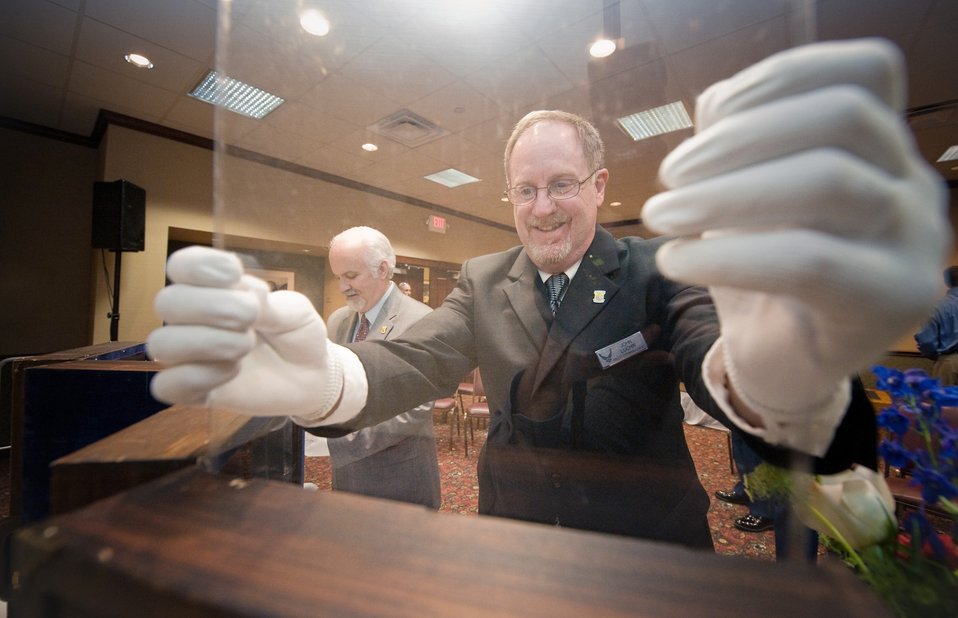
Doolittle Raiders 68th reunion

Robert Adair (left) and John Luchin carefully replace the display panels of the Doolittle Raiders' case of goblets after being used in a ceremony in Fairborn, Ohio, April 6, 2010. Mr. Adair is a conservator and Mr. Luchin is a collections registrar with the National Museum of the U.S. Air Force who keep, care and transport the goblets for the Raiders.